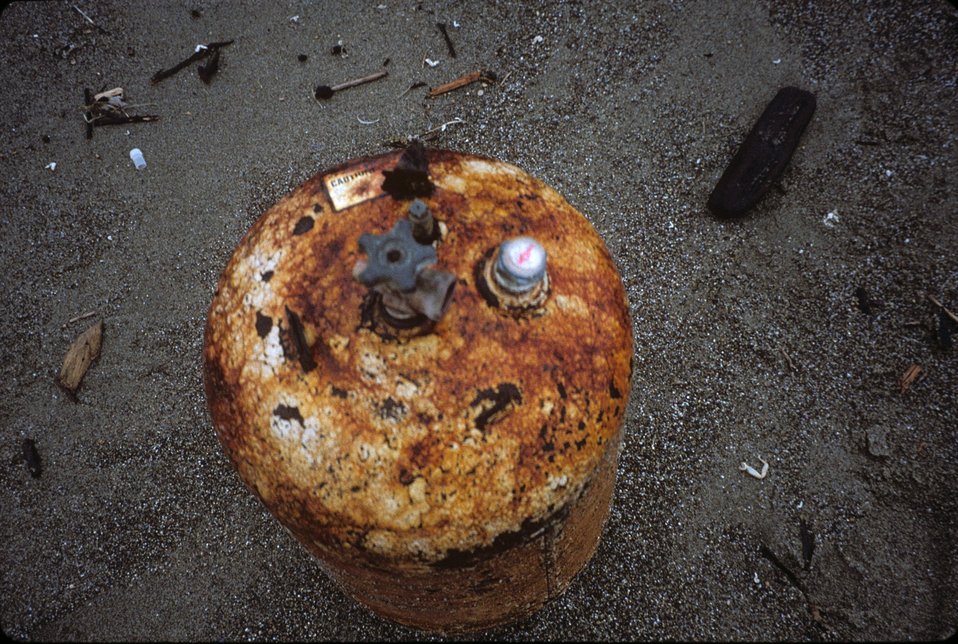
Point Reyes Great Beach south end. Marine debris - an evil-looking cannister probably once used for propane or acetylene.